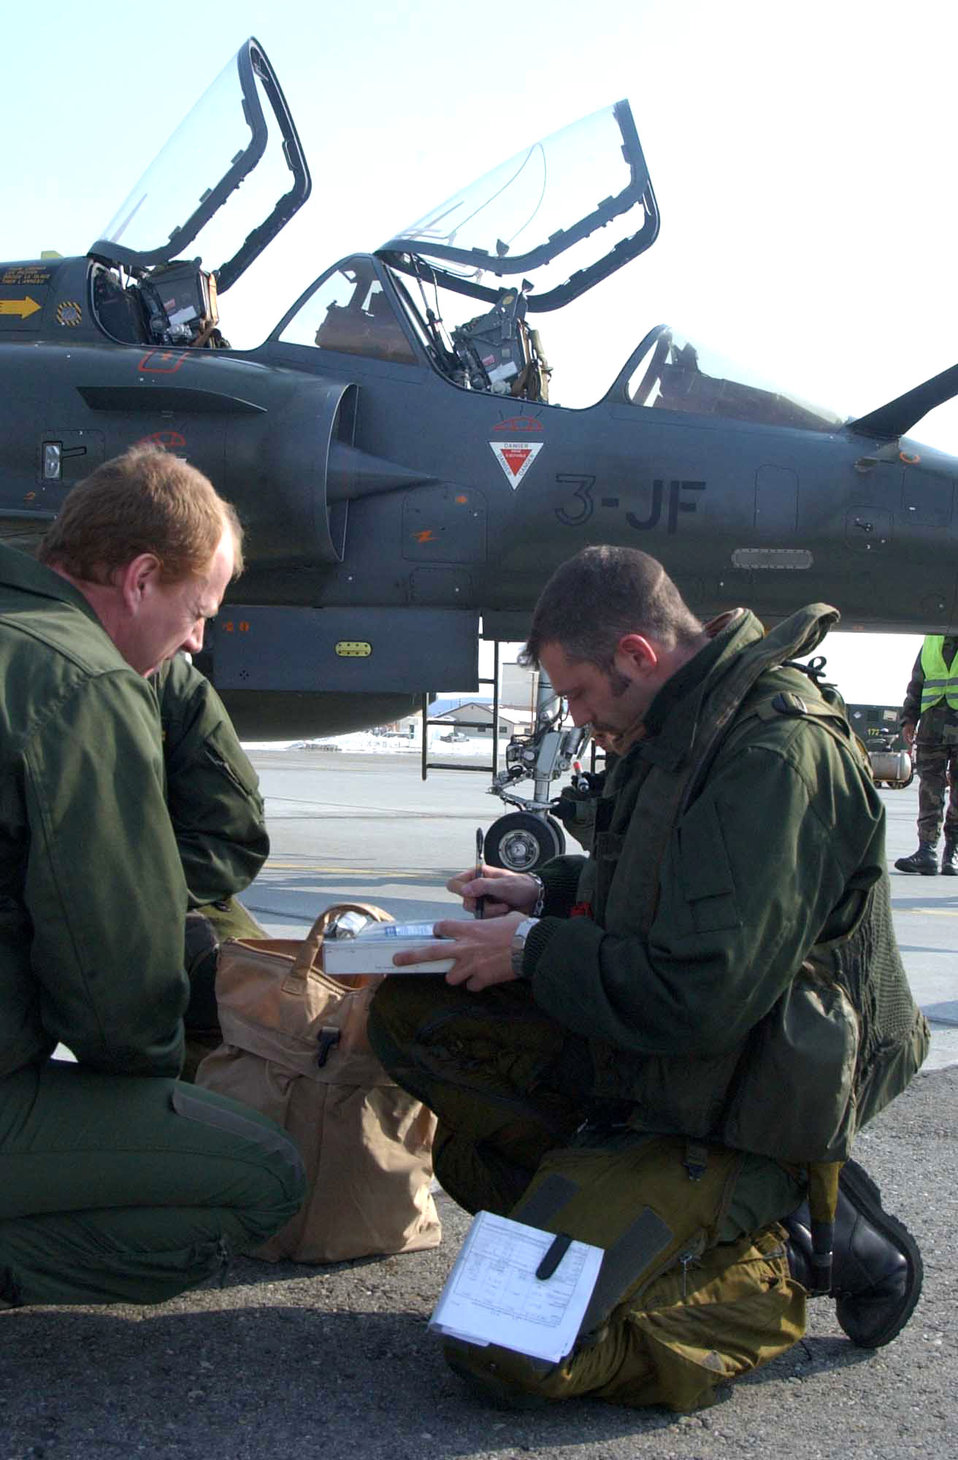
Eielson pilots get aggressive aircraft during Red Flag-Alaska

French air force pilots complete customs paperwork after landing on the flightline April 3 at Eielson Air Force Base, Alaska. Red Flag-Alaska exercise runs April 5 through April 21 and simulates air combat conditions.